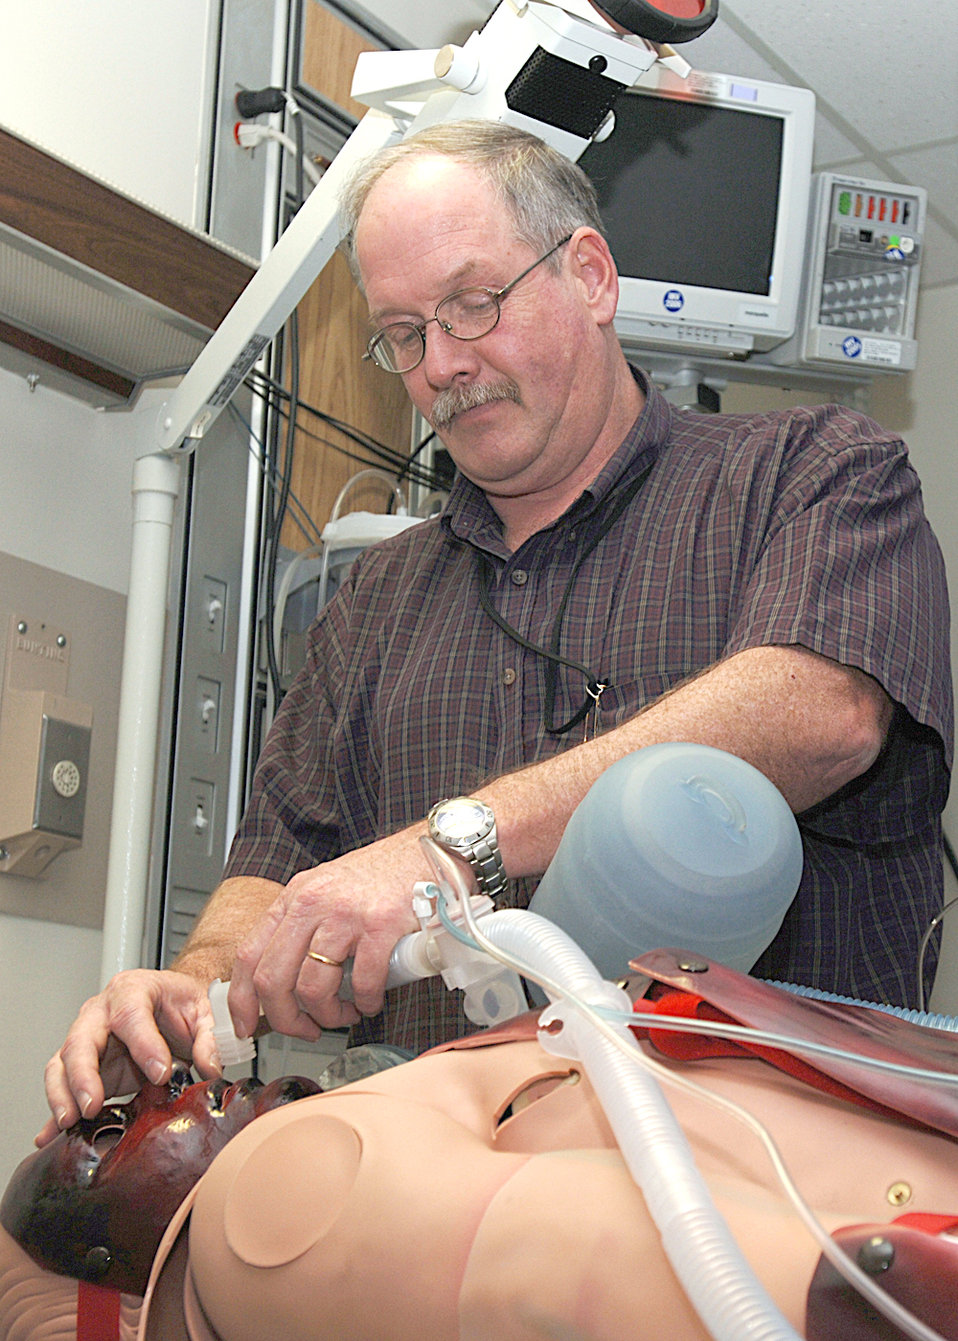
Simulation center provides edge to medics

John Mechtel sets up a replicated burn victim's airway in one of the simulation center's scenario rooms at Wilford Hall Medical Center Feb. 9 at Lackland Air Force Base, Texas. The center has trained more than 1,400 people since July 2005 and has the capability to train complex medical concepts using virtual reality simulators, task trainers and high-fidelity mannequins that respond correctly to procedures and therapies rendered by medics. Mr. Mechtel is the 59th Medical Wing Simulation Center program manager.